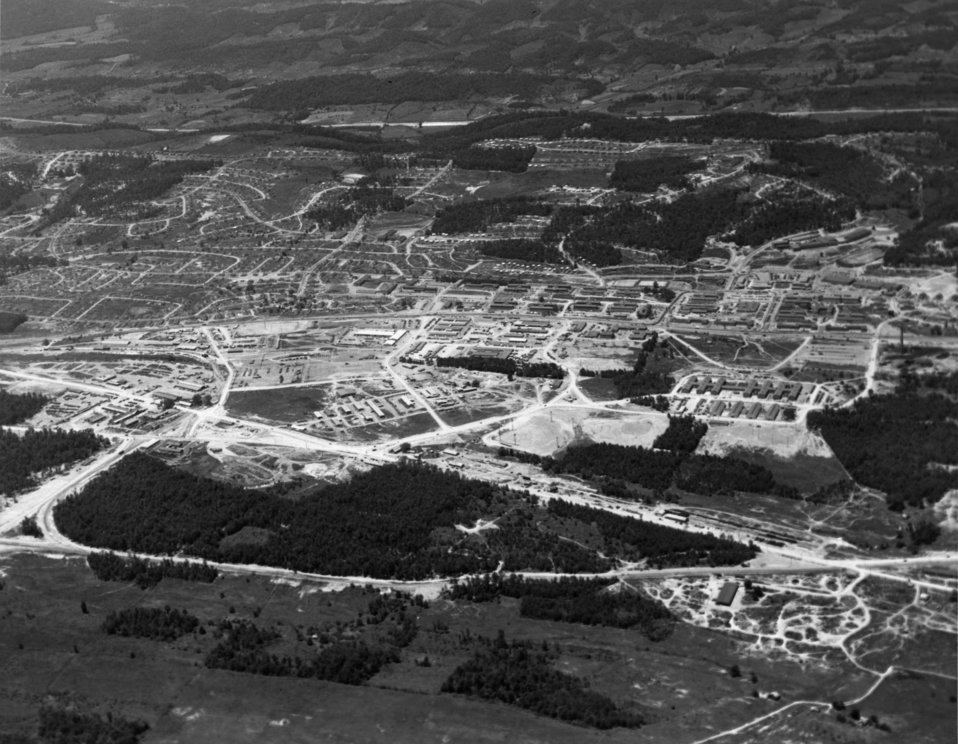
Aerial of Oak Ridge